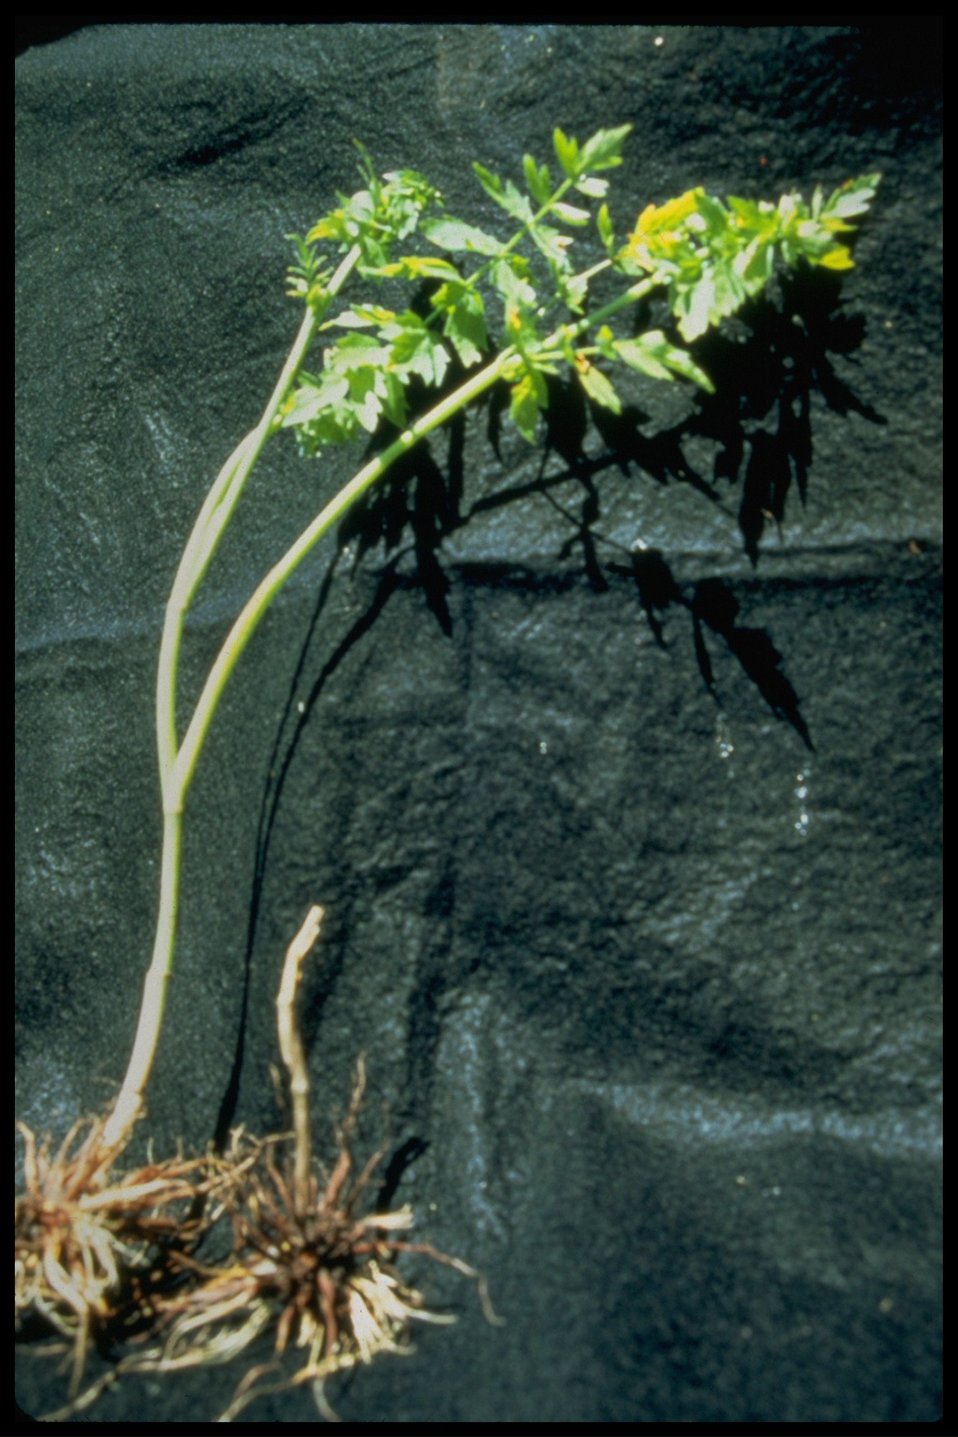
Medium shot of Howell's false caraway (Perideridia howellii).